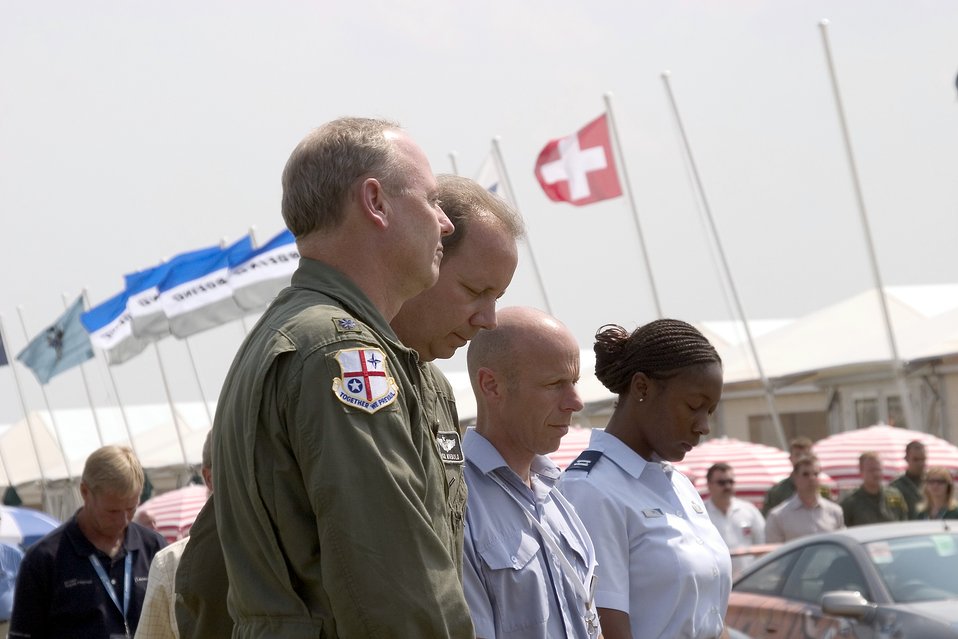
U.S. servicemembers join two-minute tribute to terrorist victims

ROYAL AIR FORCE FAIRFORD, England -- (Left to right) Col. Paul Wuebold and Lt. Col. Tom Gill join Squadron Leader William Wain and Capt. Toni Tones, as they pay their respects during the countrywide two-minute moment of silence July 14. The tribute was in remembrance of the victims of the terrorist attacks in London on July 7. Colonel Wuebold is the commander of the 420th Air Base Group here, and Colonel Gill is the deputy commander. Mr. Wain is the station commander here, and Captain Tones is assigned to the U.S. Air Forces in Europe public affairs office.